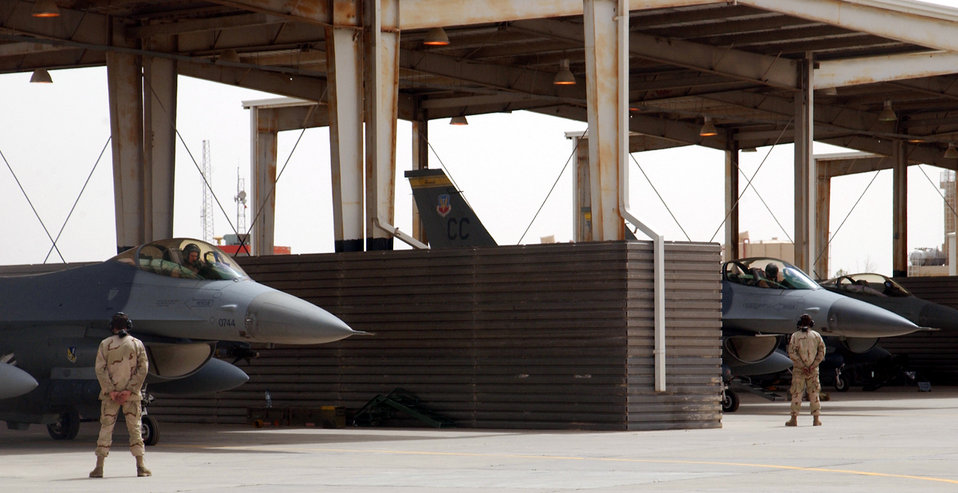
Falcon roost

OPERATION IRAQI FREEDOM -- Crew chiefs with the 332nd Expeditionary Aircraft Maintenance Squadron prepare to launch F-16 Fighting Falcons from a desert air base March 24.